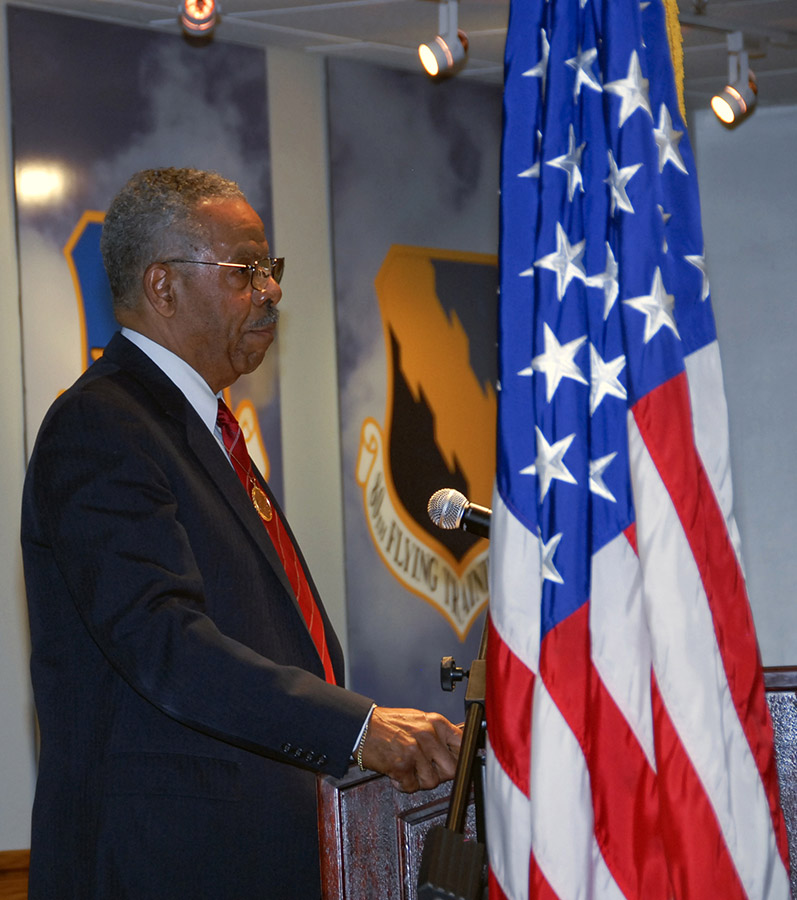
Tuskegee Airmen paved way for King's legacy

Don Elder speaks to guests at the annual Dr. Martin Luther King Jr. Jan. 14 at Sheppard Air Force Base, Texas. Mr. Elder said the Tuskegee Airmen's pursuit of serving their country as aviators and aircraft mechanics was a precursor to Dr. King's civil rights movement in the decades to come. Mr. Elder is a member of the famed Tuskegee Airmen.